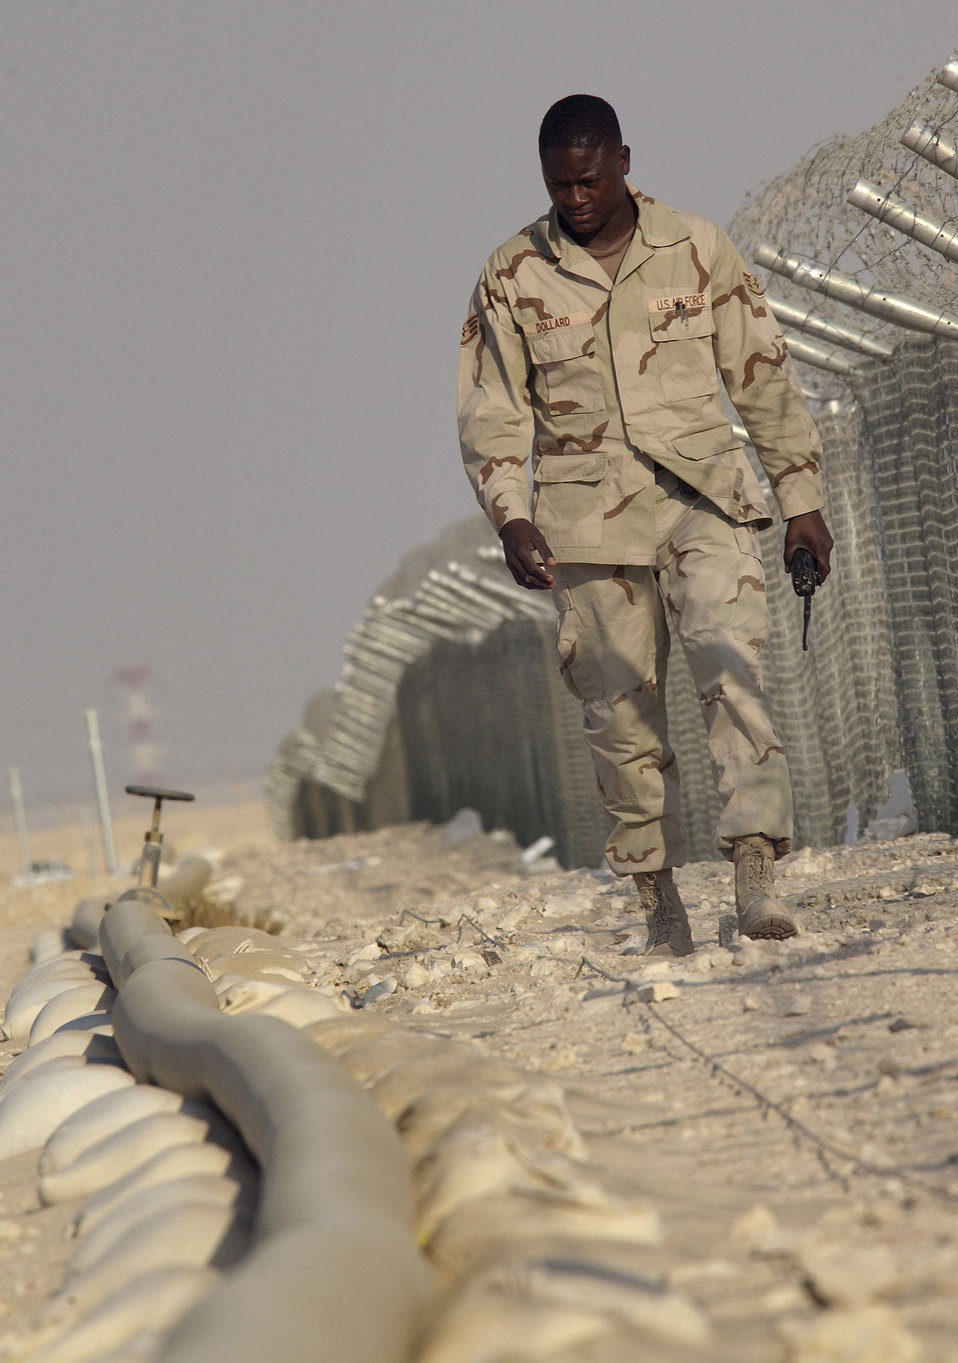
I walked the line

SOUTHWEST ASIA (AFPN) -- Staff Sgt. Bruce Dollard looks for leaks along a 2.9-mile above-ground fuel hose used to move jet fuel. The hose is a temporary fix until a permanent pipeline is installed. Dollard is assigned to the 379th Expeditionary Logistics Readiness Squadron here and is deployed from the 78th LRS at Robins Air Force Base, Ga.